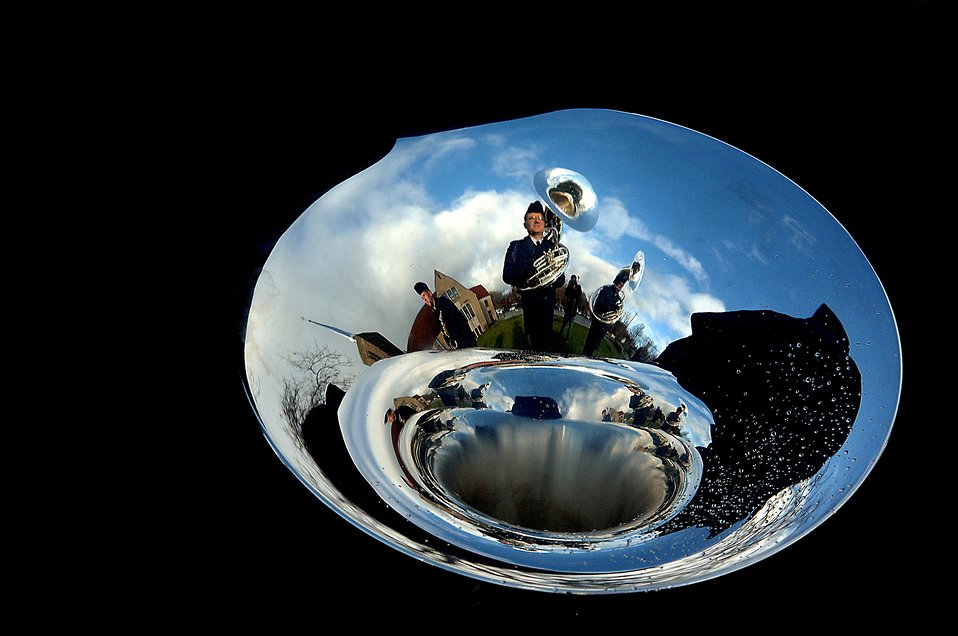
Air Force band plays final tribute for President Ford

Rehearsal for the funeral of Gerald R. Ford in Grand Rapids, Mich., is reflected in the bell of a sousaphone.